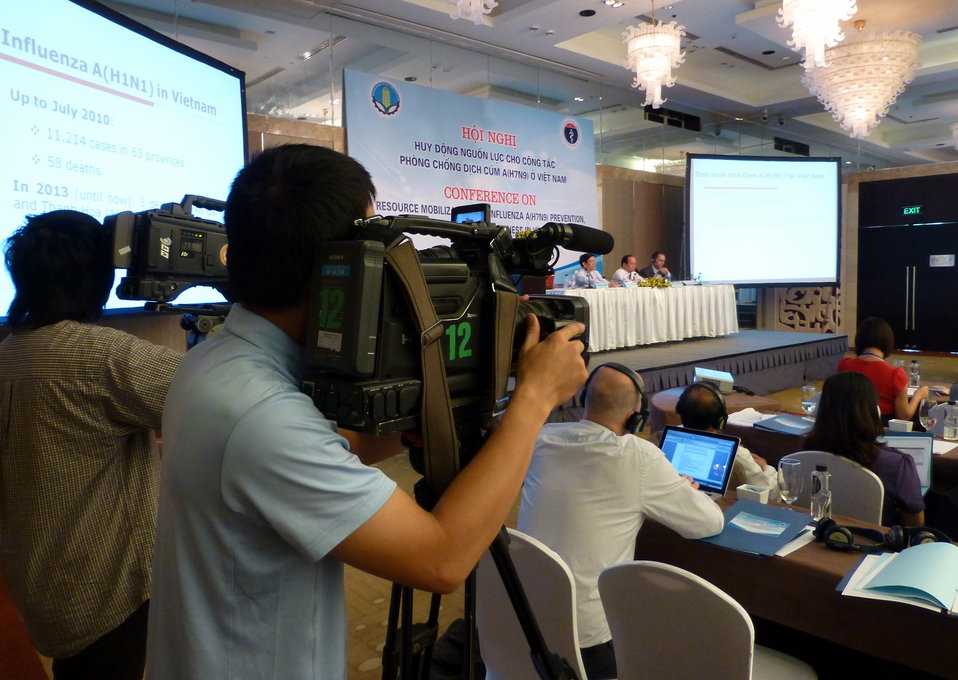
Conference on Resource Mobilization for Influenza A (H7N9) Prevention, Control and Preparedness in Vietnam

Hanoi, May 6, 2013
Supported by USAID Vietnam